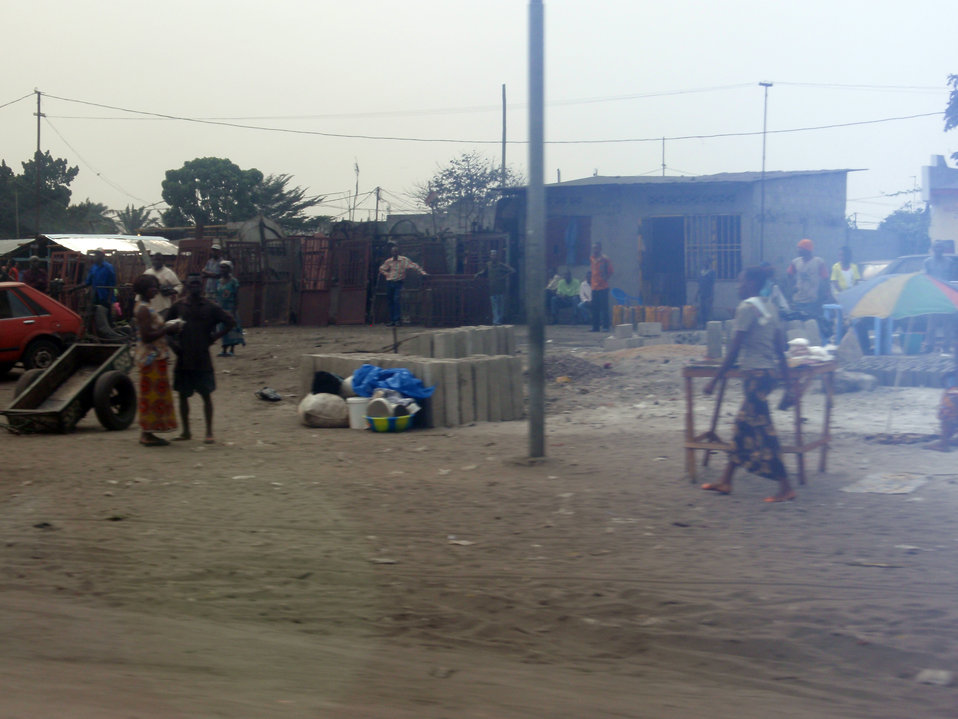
Behind the Scenes: Arrival in Kinshasa

The scene entering Kinshasa from the airport in Kinshasa, Democratic Repbulic of Congo August 10, 2009.